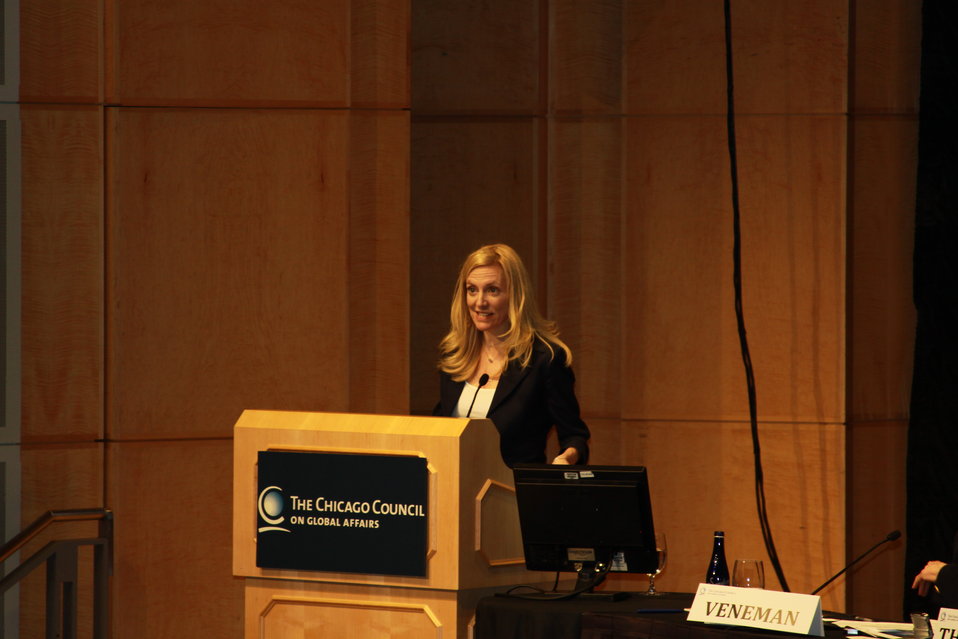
Under Secretary Brainard DeliversUnder Secretary Brainard Delivers Remarks Remarks

U.S. Under Secretary of Treasury for International Affairs Lael Brainard delivers remarks at the Chicago Council on Global Affairs' Symposium on Global Agriculture and Food Security in Washington, D.C., on May 24, 2011.